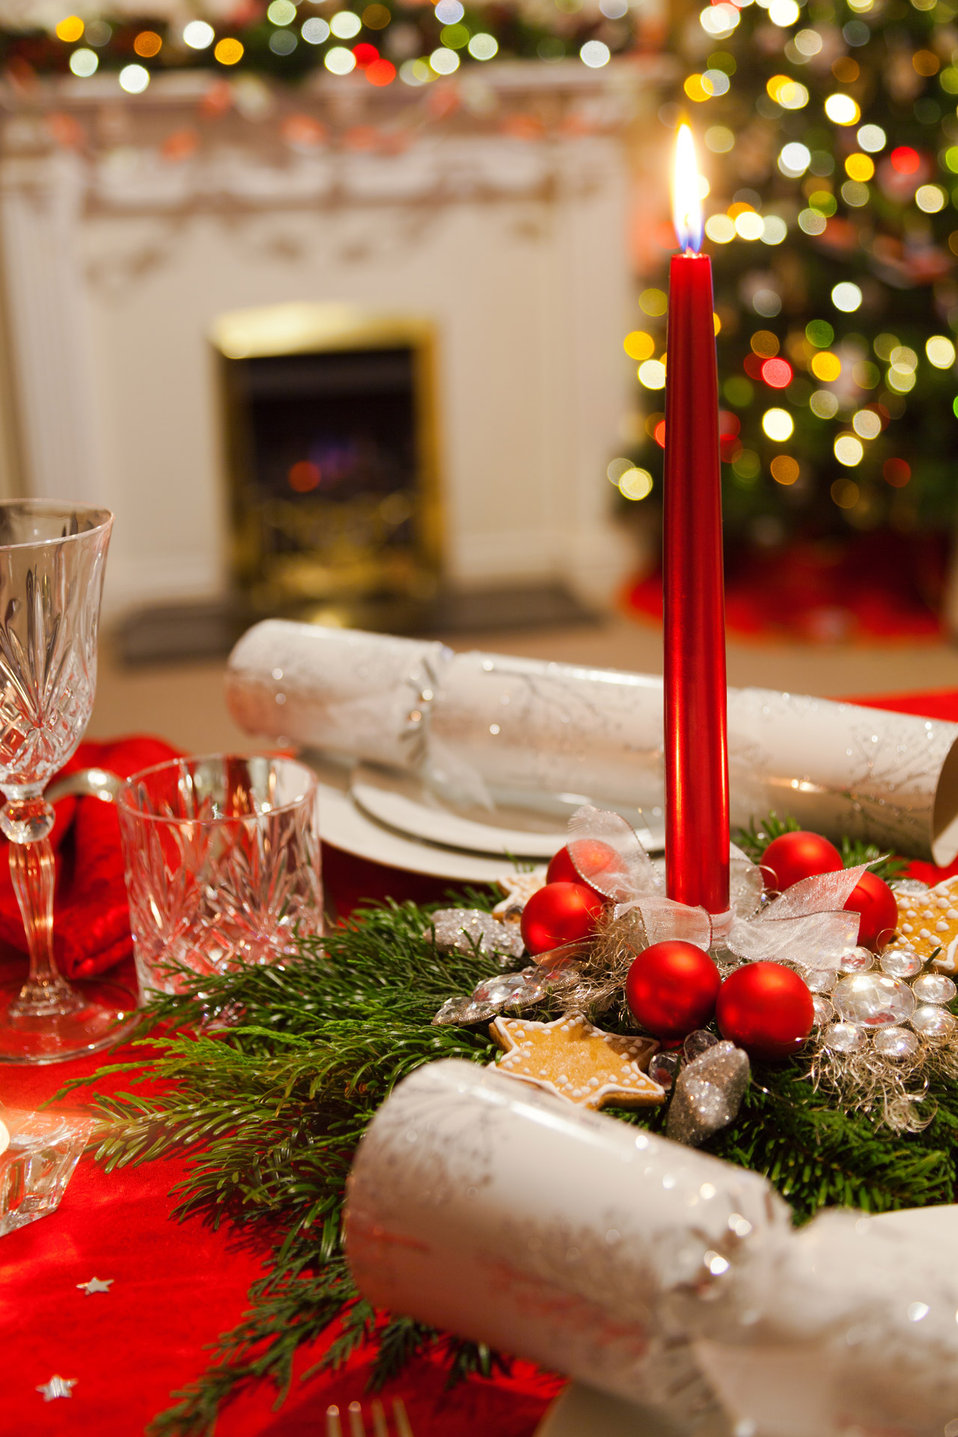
Christmas table

Decorated christmas table with a fireplace and a christmas tree in the background.